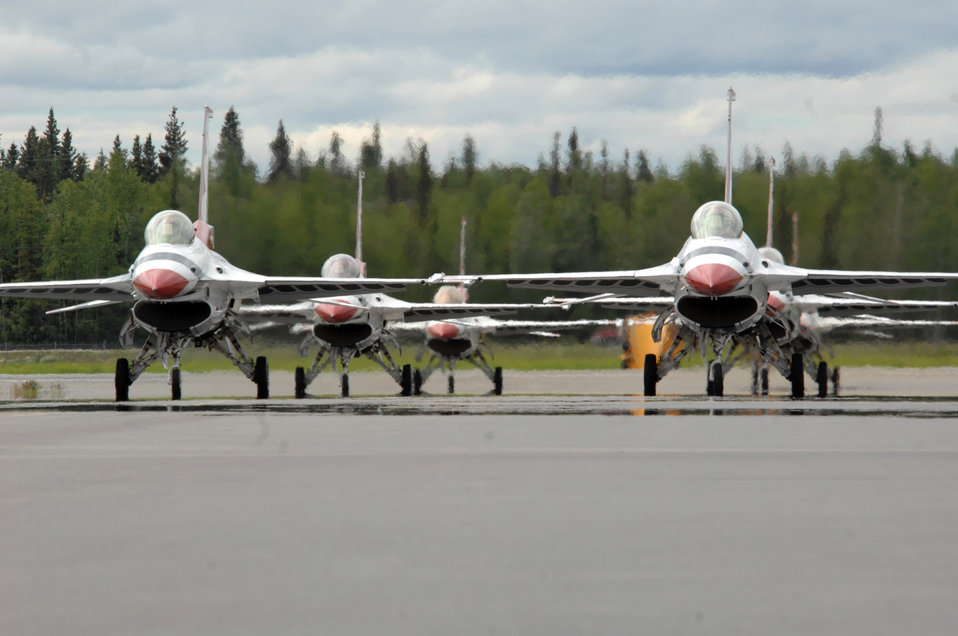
Thunderbirds 'Soar into Solstice' at Eielson

The Air Force Thunderbirds flight demonstration team taxi onto the flightline during the June 24 airshow at Eielson Air Force Base, Alaska, June 24. The Thunderbirds are assigned to the U.S. Air Force Air Demonstration Squadron at Nellis AFB, Nev.